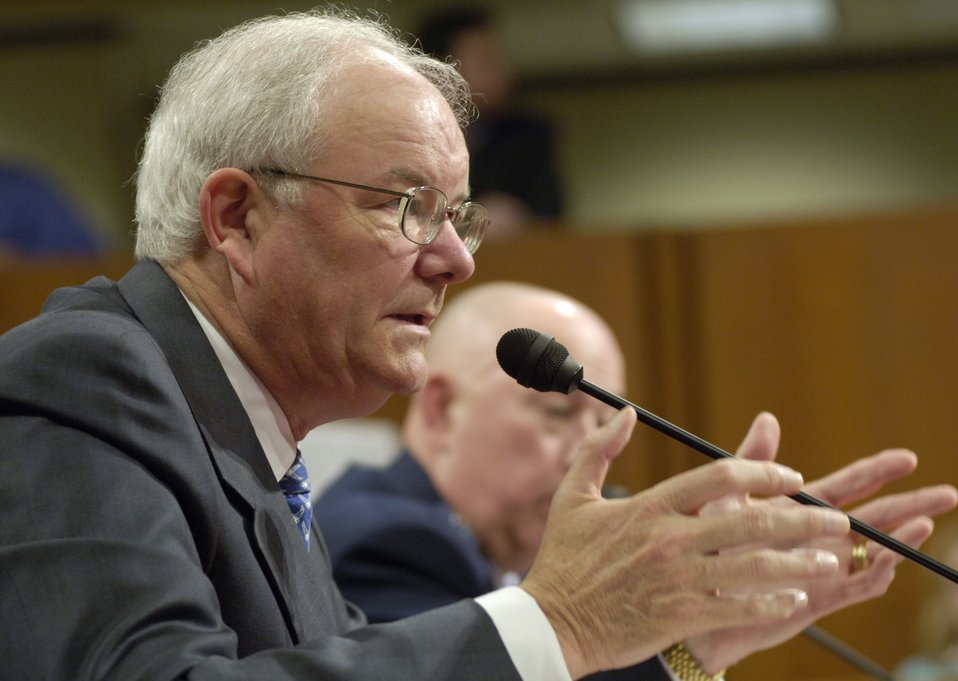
Testimony on Capitol Hill

Secretary of the Air Force Michael W. Wynne answers questions during a Senate Armed Services Committee hearing Thursday, March 2, 2006, in Washington, D.C.